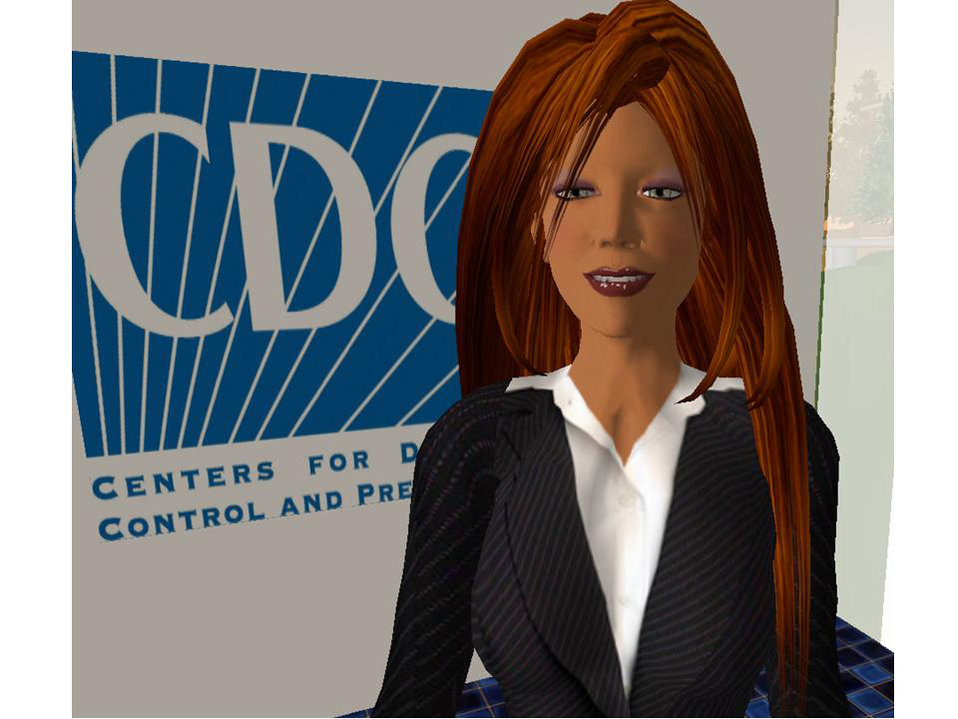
This computer-generated image depicts Hygeia Philo, the CDC's lead avatar in the virtual world of Second Life. This was the forth design stage of the avatar. Customizing an avatar's appearance is a key aspect to community acceptance. This image shows both a more corporate look to the avatar, as well as a real world image of the CDC's marquee, while placing them into the virtual context in this visual experiment. Dr. John Anderton designed Hygeia Philo, whose name is based on the Greek meaning 'lover of health', to be the modern muse of health, serving as lead health spokesperson and health educator in this new virtual space. See PHIL 10002, 10005, 10007, 10008, 10009, 10012, 10013, 10014, 10015, and 10016 for additional images of Ms. Philo.